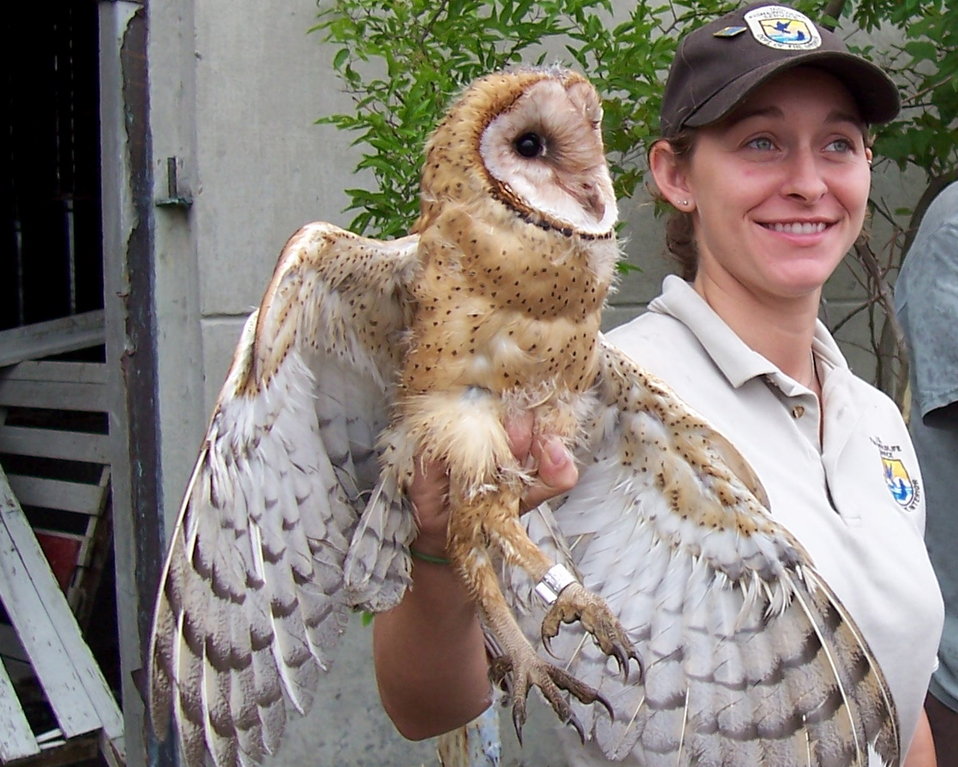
Amanda Bessler

U.S. Fish and Wildlife Service